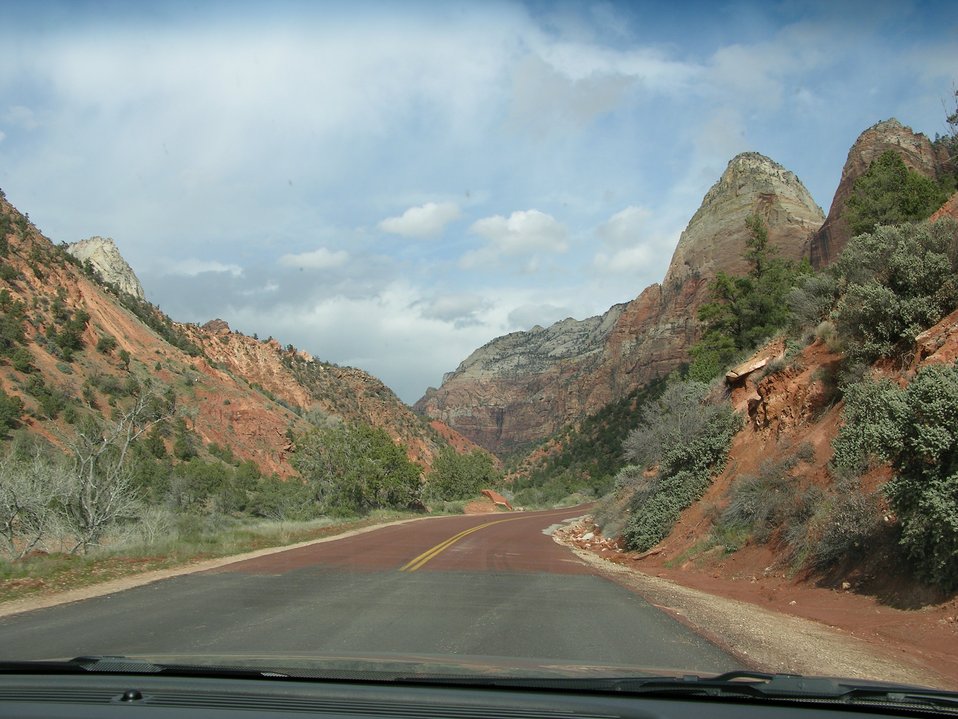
The road to Zion National Park